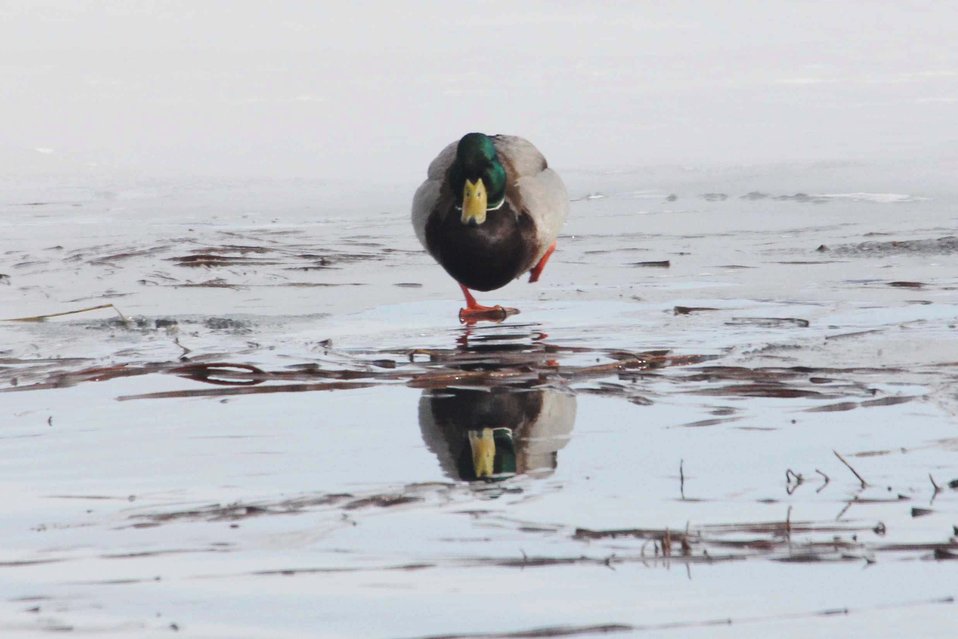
Treading Carefully

A mallard gingerly walks across the ice near the visitor center.

Credit: USFWS / Ann Hough, National Elk Refuge volunteer